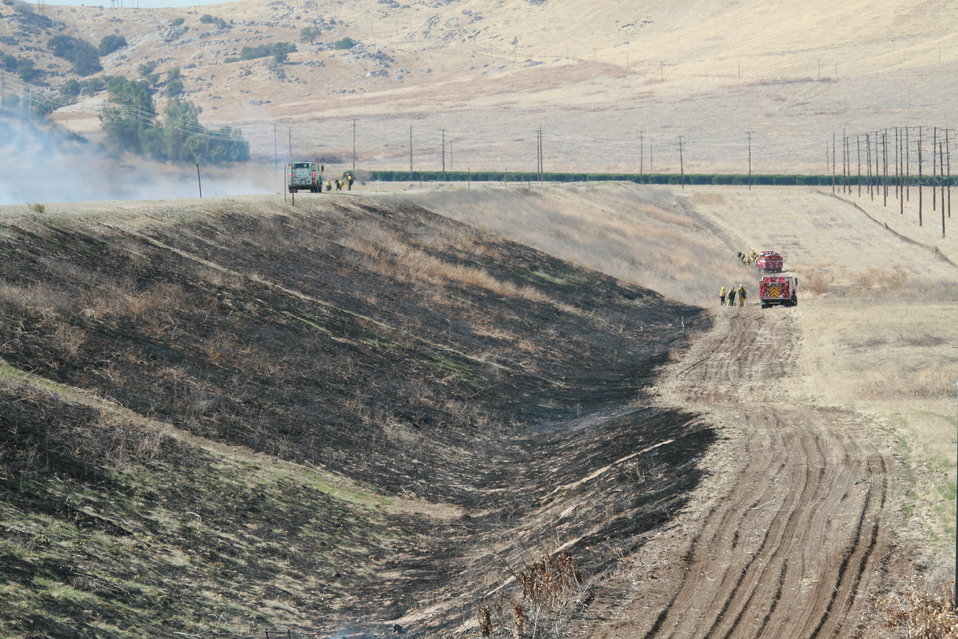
Controlled burn at Success Lake

Firefighters with the California Department of Forestry and Fire Protection’s Tulare Station and the U.S. Forest Service’s Sequoia National Forest put out a controlled burn at Success Lake near Porterville, Calif., Nov. 3, 2011. Success Lake is managed by the U.S. Army Corps of Engineers Sacramento District. The exercise removed invasive weeds from the face of Success Dam and a nearby wilderness area, making maintenance and inspection easier and cheaper for the Corps, and providing hands-on training for the firefighters.